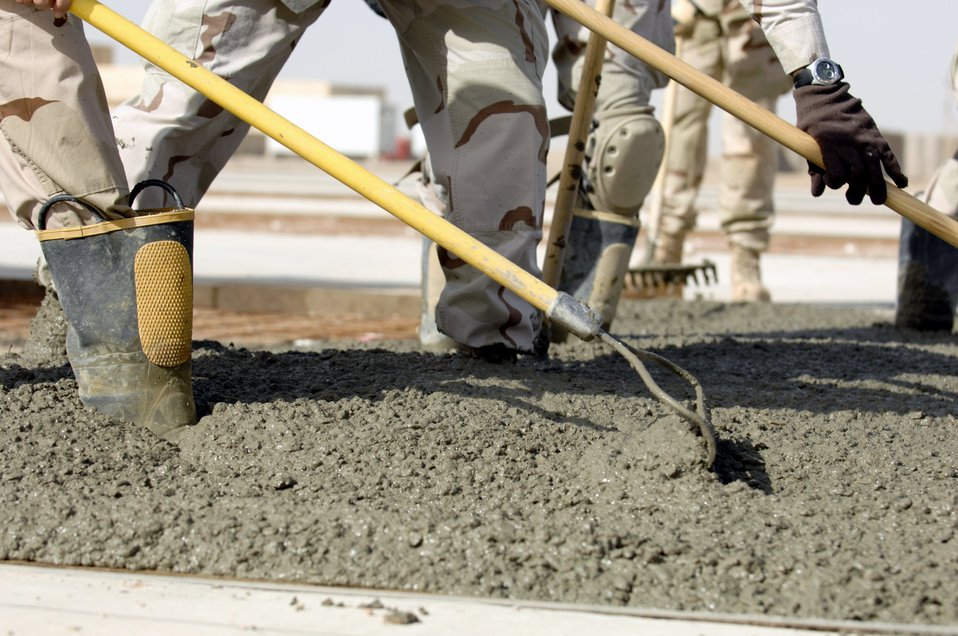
Civil engineers pave the way for Iraqi Army

Members of the 407th Expeditionary Civil Engineer Squadron at Ali Air Base, Iraq, get ankle deep in cement June 11 as they build a drill pad at Camp Mittica, Iraq,. The 407th ECES is on the Iraqi base constructing a cement drill pad that will be used by the Iraqi army to train their enlisted soldiers.